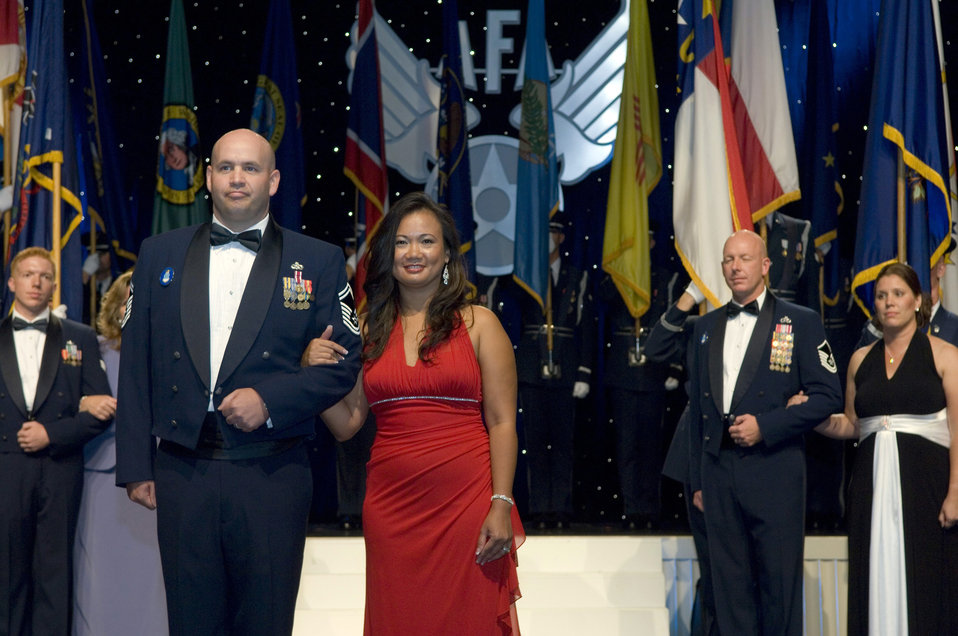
Air Force officials recognize 12 Outstanding Airmen of Year

Senior Master Sgt. Jeffery Steagall and his wife, Eileen are introduced during the 2009 12 Outstanding Airmen of the Year dinner Sept. 14, 2009, at the Gaylord National Hotel and Convention Center, National Harbor, Md. Sergeant Steagall is a communications and information systems inspections manager assigned to Peterson Air Force Base, Colo. Sergeant Steagall is one of the 12 Outstanding Airmen of the Year.